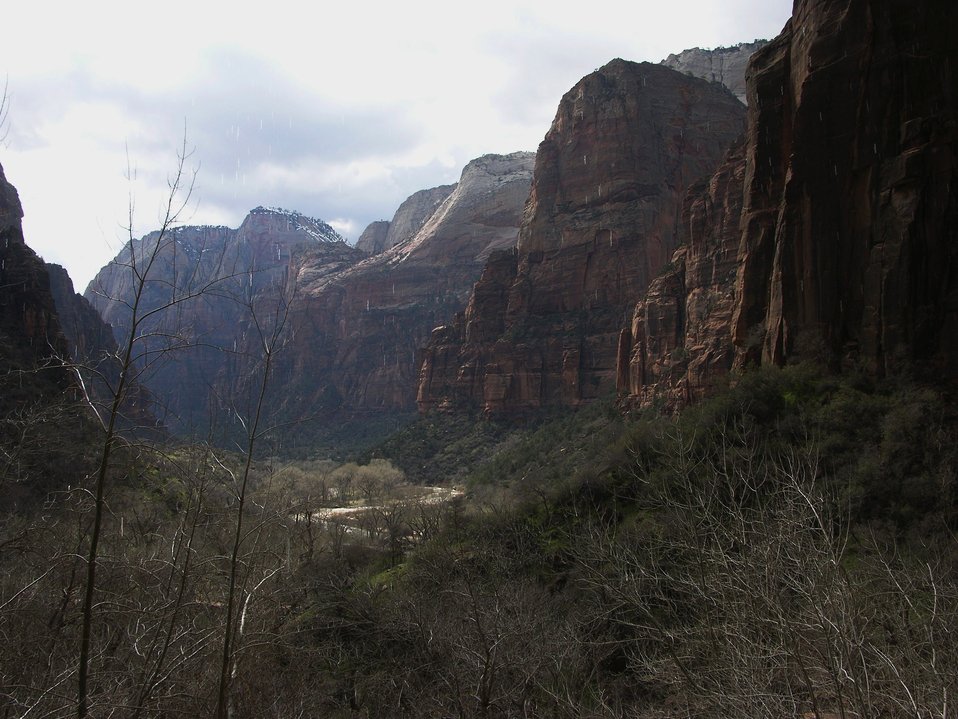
A view in Zion National Park